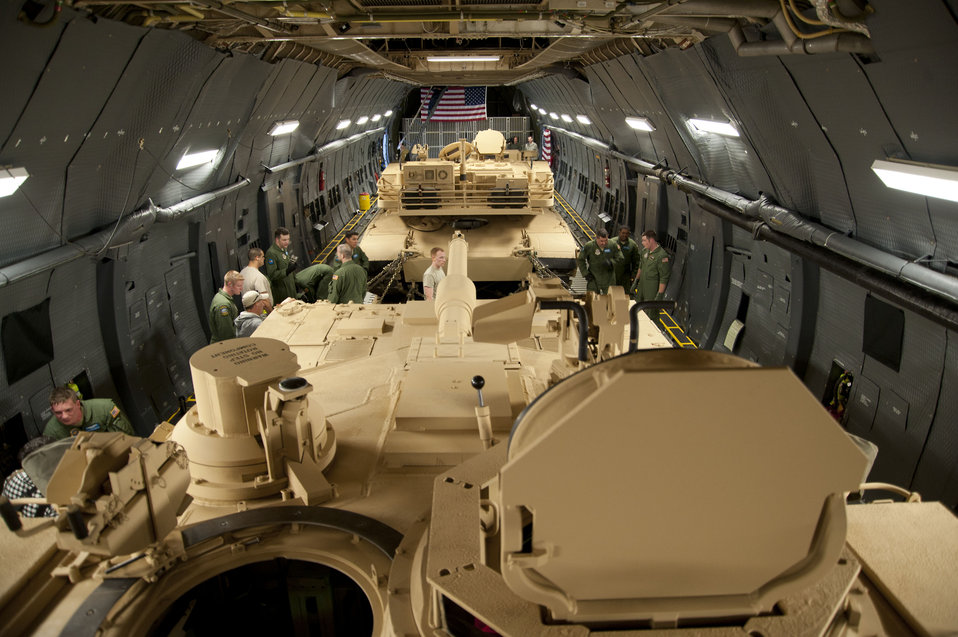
'Tanks' for the ride

Two M-1 Abrams tanks from Aberdeen Proving Ground, Md., are loaded in the cargo area of a C-5M Super Galaxy assigned to Dover Air Force Base, Del. The C-5M currently holds 42 world aviation records in airlift. The modernized version of the C-5, the Super Galaxy has 70 improvements, including new GE CF6 engines providing 22 percent more thrust and cutting climb time in half. New lighting in the cargo area increases safety of loading and offloading cargo.